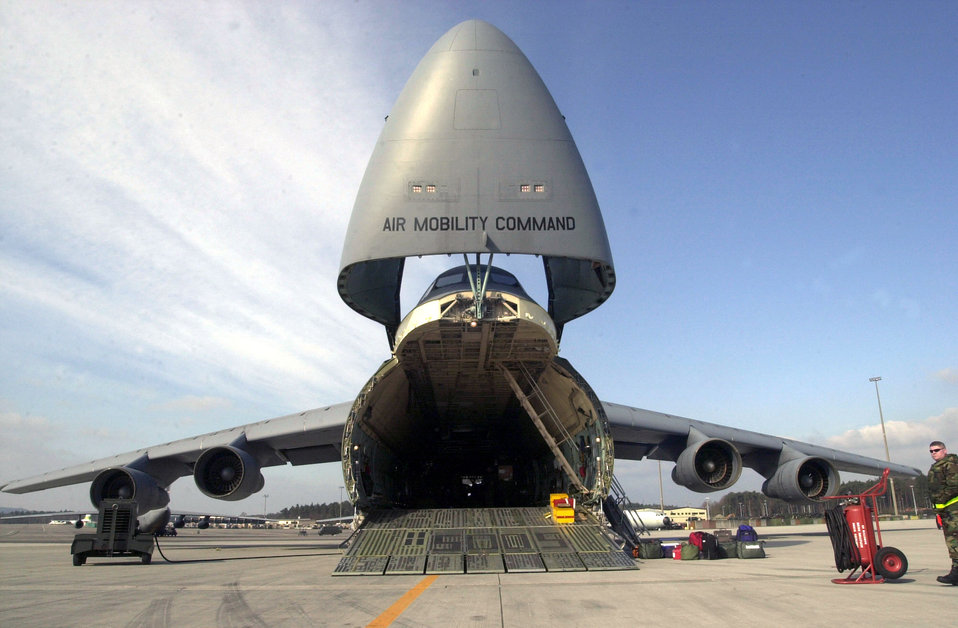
Freedom cargo

OPERATION IRAQI FREEDOM -- A C-5 Galaxy transport from the 439th Airlift Wing, 337th Air Reserve Squadron, Westover Air Reserve Base, Chicopee, Mass., sits on the ramp at Ramstein Air Base Germany while its crew prepares to upload the day's cargo in support of Operation Iraqi Freedom, March 31, 2003. The C-5 Galaxy is the largest aircraft in the Air Force inventory and is capable of delivering completely-equipped combat units, support forces and all types of supplies to any location in the world.